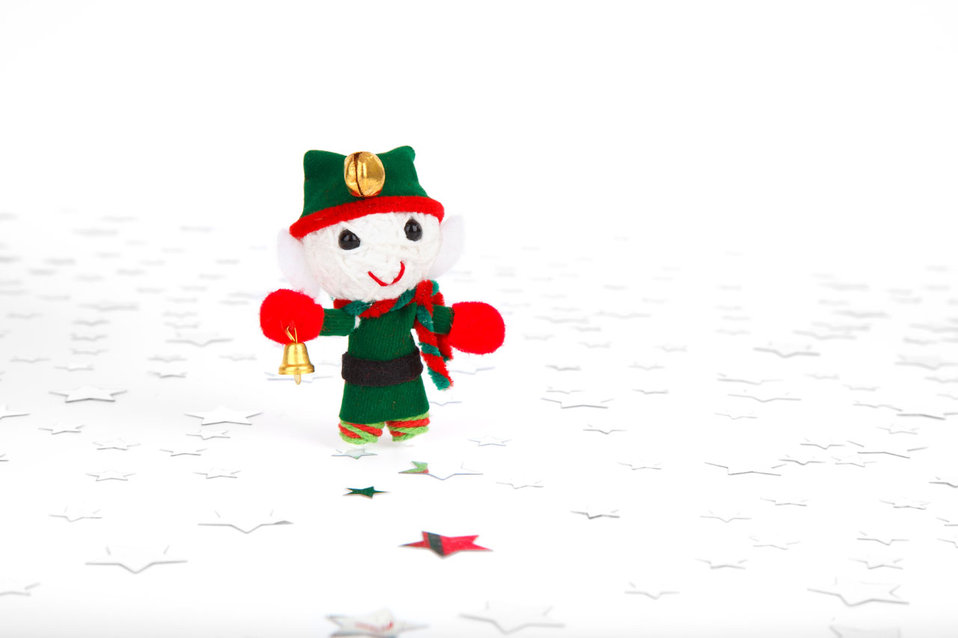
Christmas elf decoration on starry background.